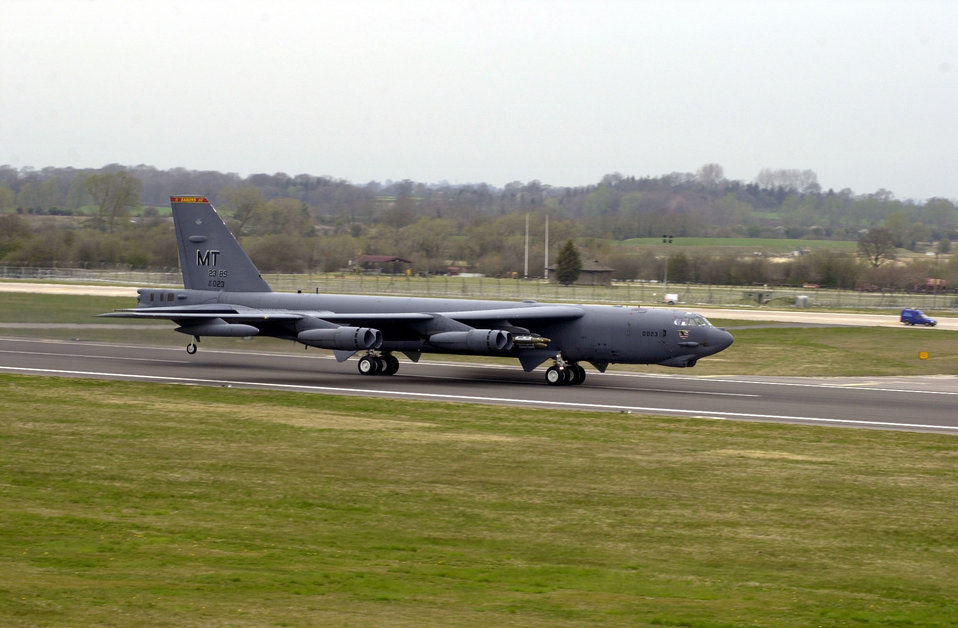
100th mission

OPERATION IRAQI FREEDOM -- A B-52 Stratofortress from the 457th Air Expeditionary Group takes off for its 100th combat mission from a forward-deployed location April 11. Aircrews at this forward-deployed location have flown more than 1,200 flying hours and dropped more than 2,400 bombs in the coalition effort.